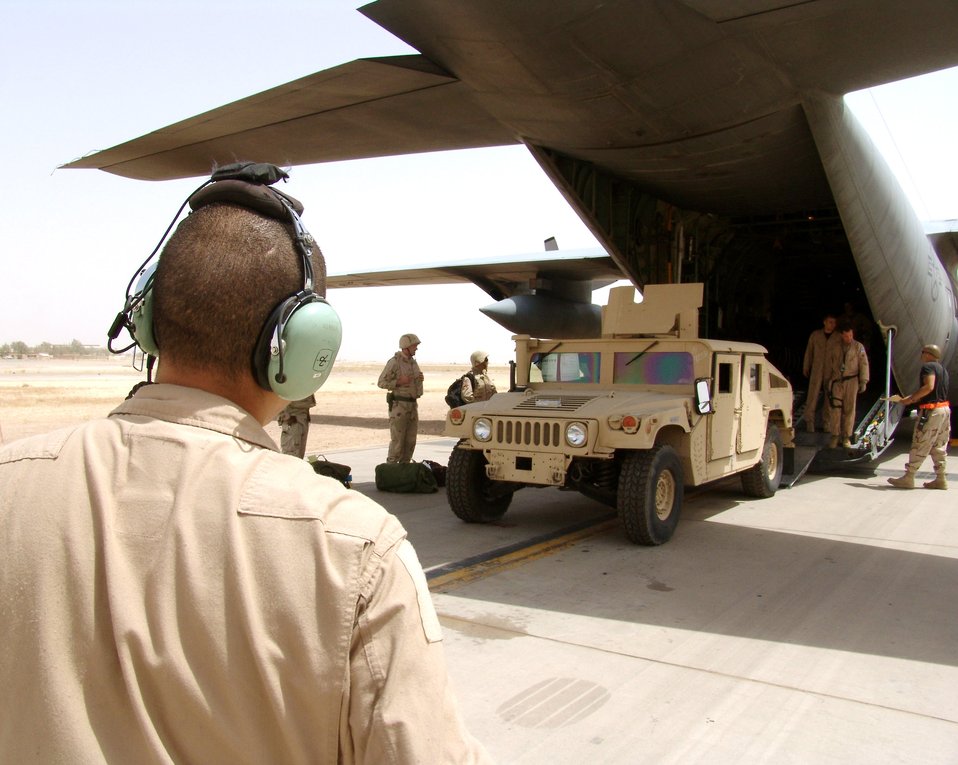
Humvee delivery

SOUTHWEST ASIA -- Airman 1st Class Thomas Miller (front) helps unload armored Humvees from a C-130 Hercules. The Humvees will be delivered to U.S. ground forces in Iraq. Airman Miller is a loadmaster with the 737th Expeditionary Airlift Squadron at a forward-deployed location and is from Pope Air Force Base, N.C.